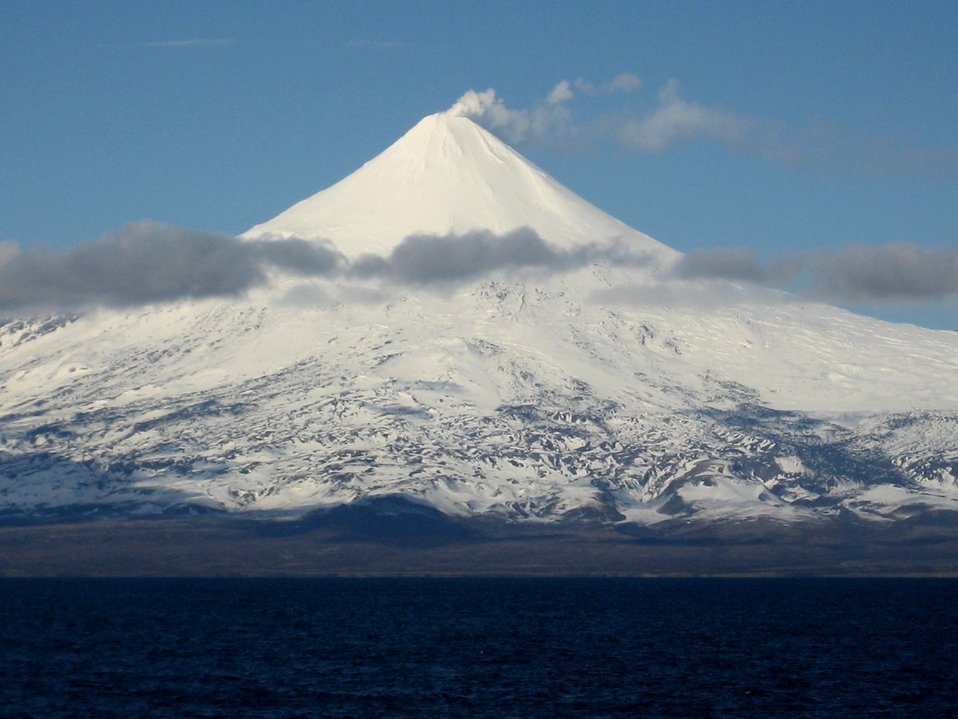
Shishaldin Volcano, one of the great navigational landmarks of Alaska.